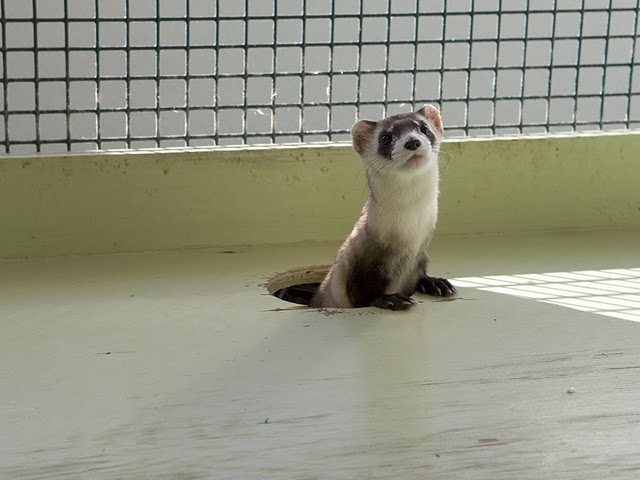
Black-footed Ferret in Captivity

Captive breeding of black-footed ferrrets is performed at the National Black-footed Ferret Conservation Center in Colorado.